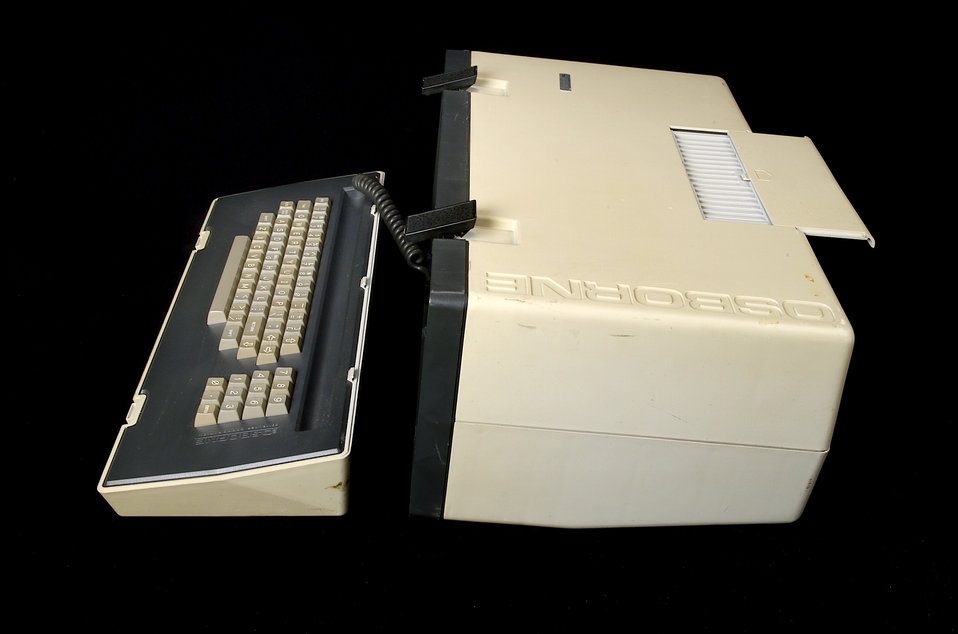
This is the Osborne 1, a 'laptop' computer first used at the CDC in 1981 and was considered the 'first true portable computer'